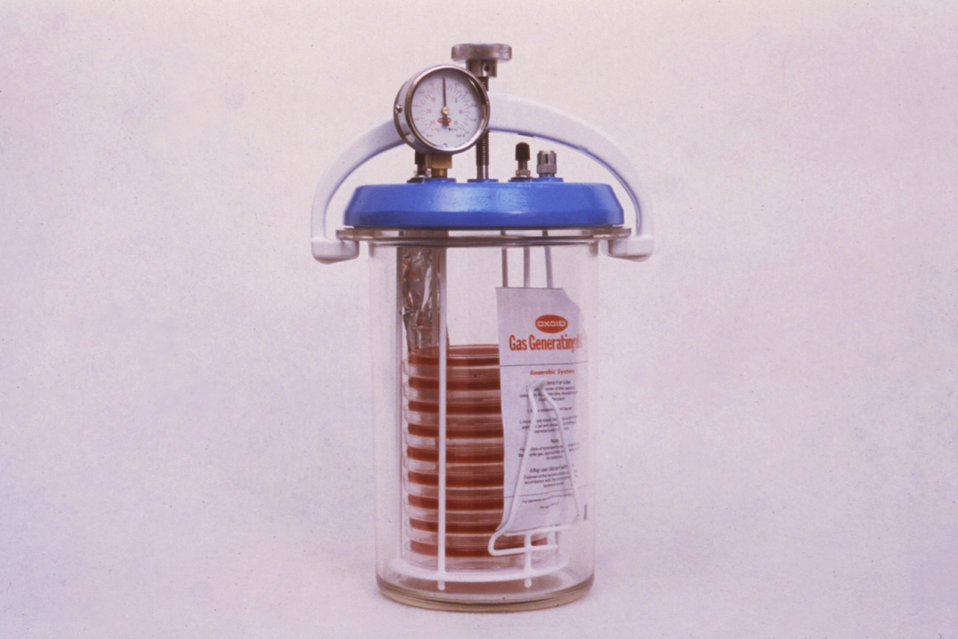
This is a photograph of an Oxoid jar with its plates and gas pack generator for the creation of an anaerobic environment.